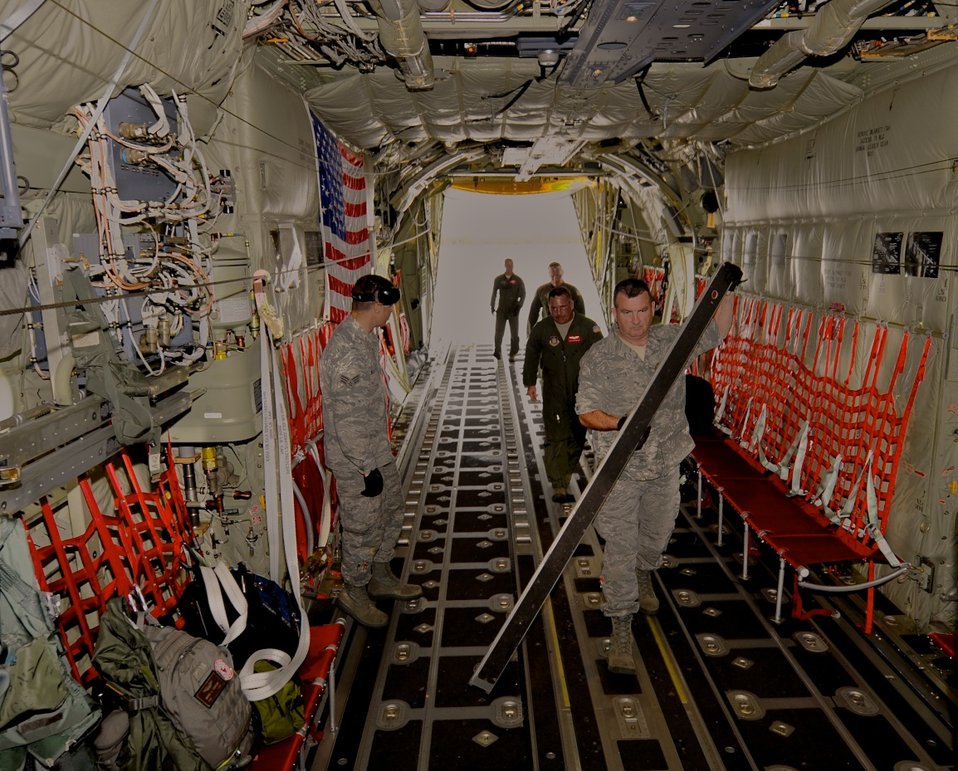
Joint training mission enables reservists to train as they fight

Airmen from the 815th Airlift Squadron prepare a C-130J Super Hercules for a joint services training mission with Army special forces April 12, 2010, in Key West, Fla.